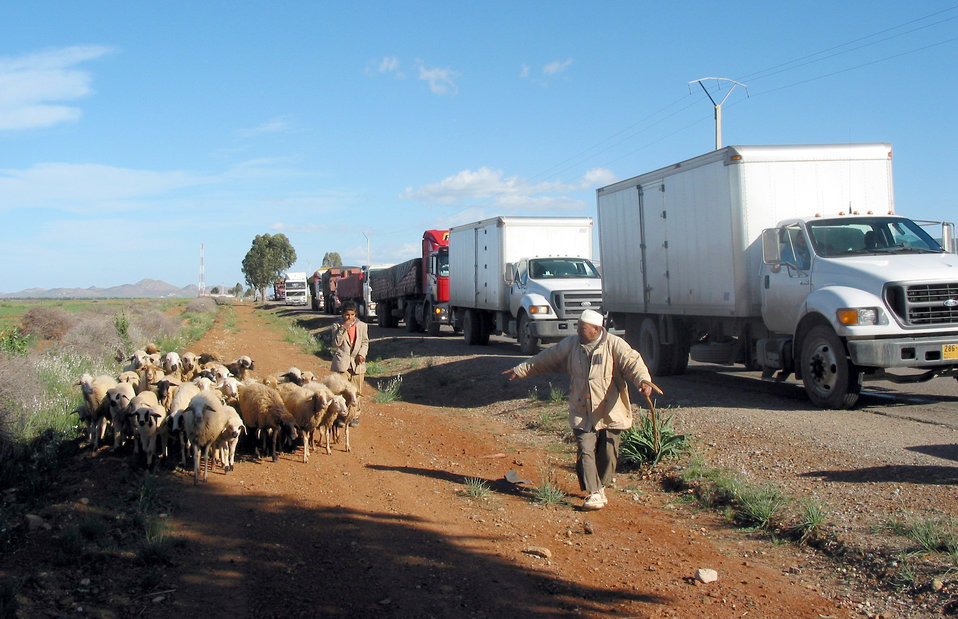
USAFE airlifts aid, experts to Morocco

AL HOCEIMA, Morocco -- A local farmer and his son tend to their herd of goats as a convoy of trucks laden with relief supplies from the United States makes its way to the Al Hoceima Province on Feb. 28. The supplies were brought here in an Air Force C-130 Hercules assigned to the 37th Airlift Squadron at Ramstein Air Base, Germany.